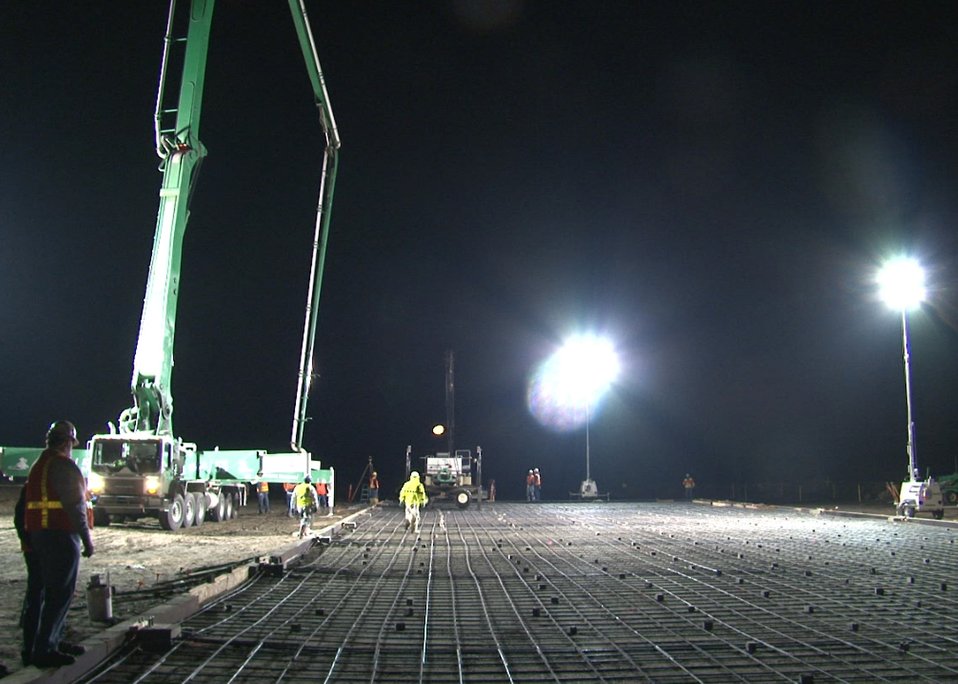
DX GW Treatment 2

The Hanford site is located on 586 square miles in southeastern Washington State